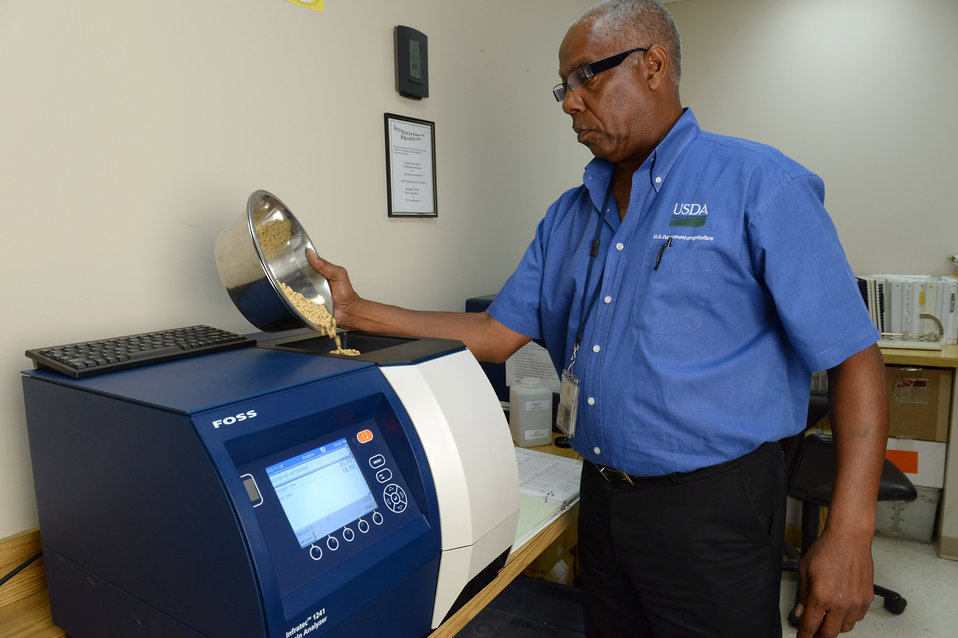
U.S. Department of Agriculture (USDA) Grain Inspection, Packers and Stockyards Administration (GIPSA) Federal Grain Inspection Service (FGIS) employee tests soybean samples at the FGIS inspection laboratory in New Orleans, LA on Monday, Nov. 18, 2013.